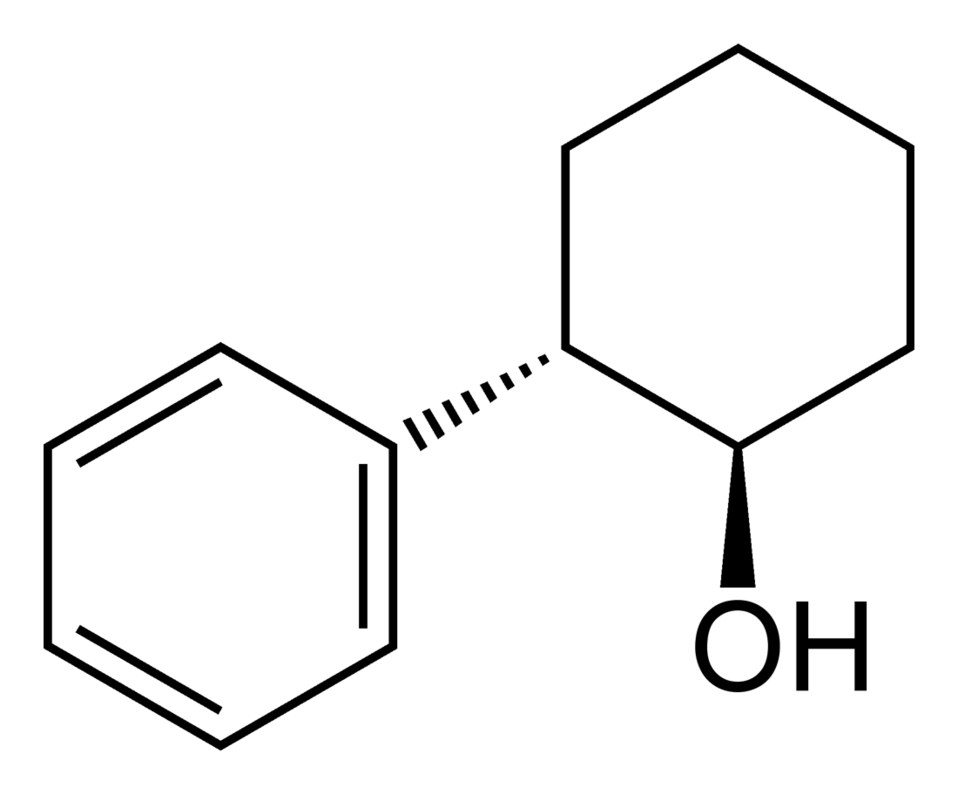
Skeletal formula of (1R,2S)-2-phenylcyclohexanol, C12H16O